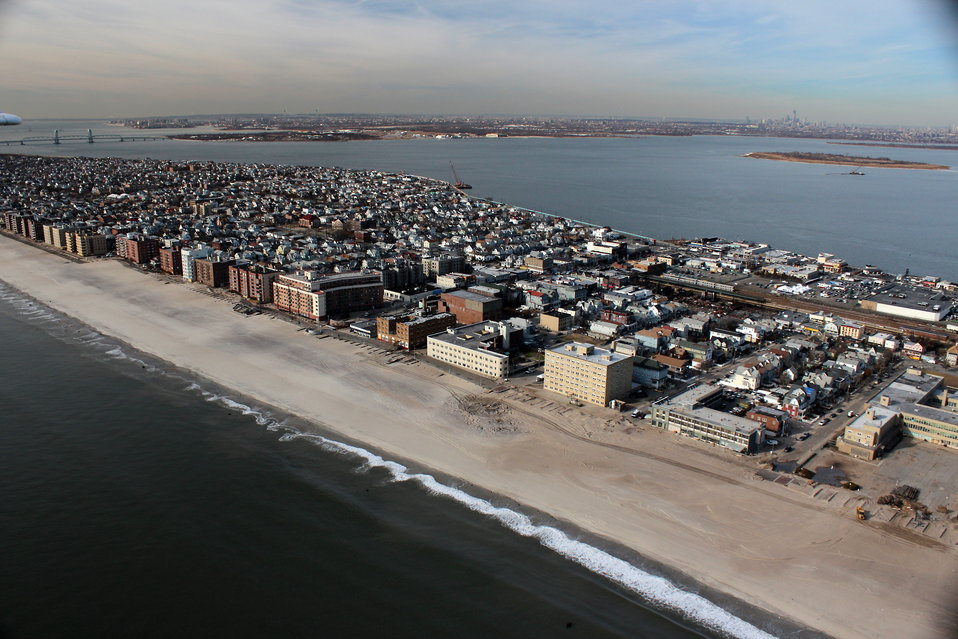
December 6, 2012 The Rockaways, New York

Here you can see a bit of the damage along the beach with the Manhattan skyline in the background.